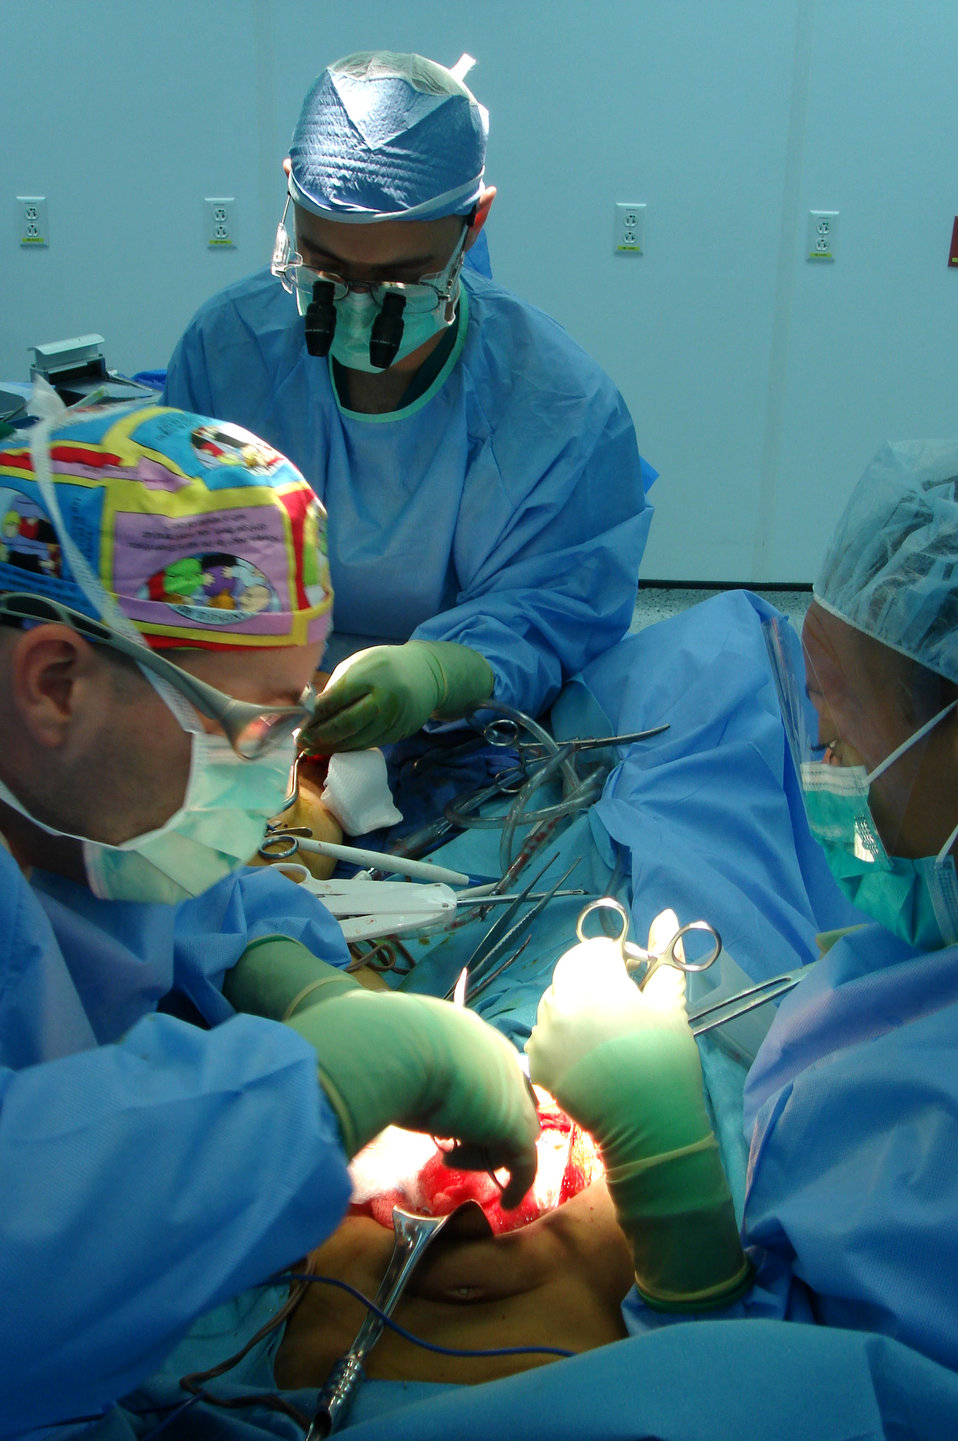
Air Force surgeons perform first successful free-flap surgery at Bagram hospital

Surgical team members Maj. (Dr.) Christopher Dress, Maj. (Dr.) Dmitry Tuder and Airman 1st Class Angelia Sneed perform a free-flap operation on a 9-year-old girl suffering from a badly mangled leg. The procedure was the team's first free-flap operation at the Craig Joint Theater Hospital at Bagram Air Base, Afghanistan.